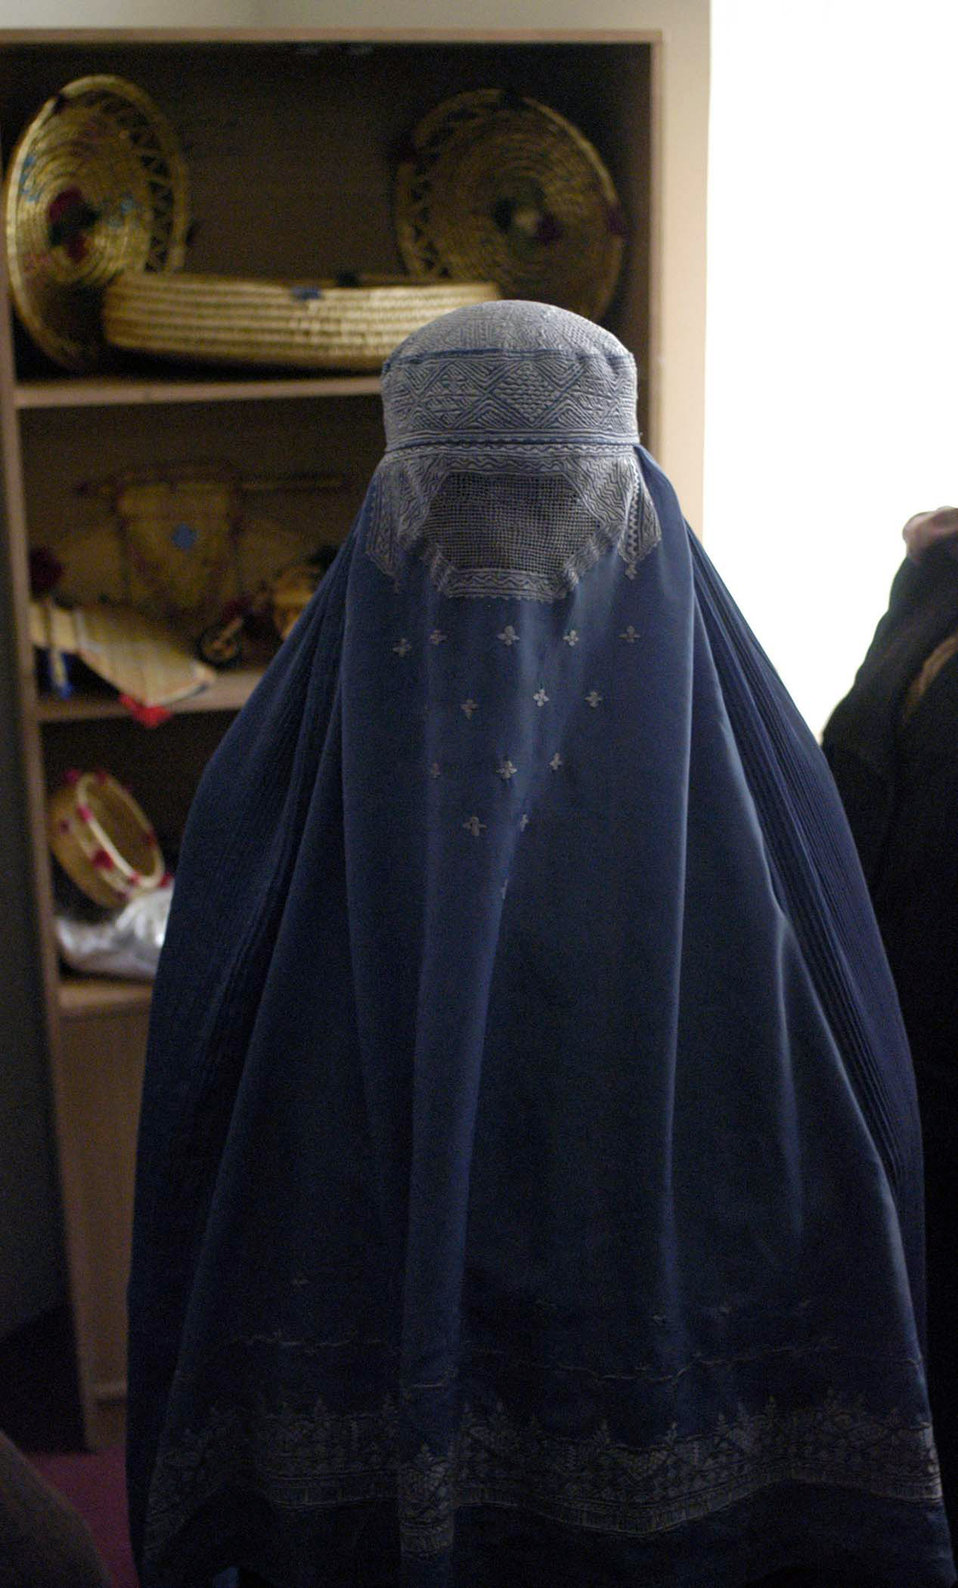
U.S. team opens shelter for Afghan women

KAPISA PROVINCE, Afghanistan - An Afghan women sells handmade crafts during the opening of a women's shelter Dec. 13 in Kapisa Province, Afghanistan. The Bagram Provincial Reconstruction Team provided more than $86,000 in support of the shelter's construction, which was accomplished by local contractors.